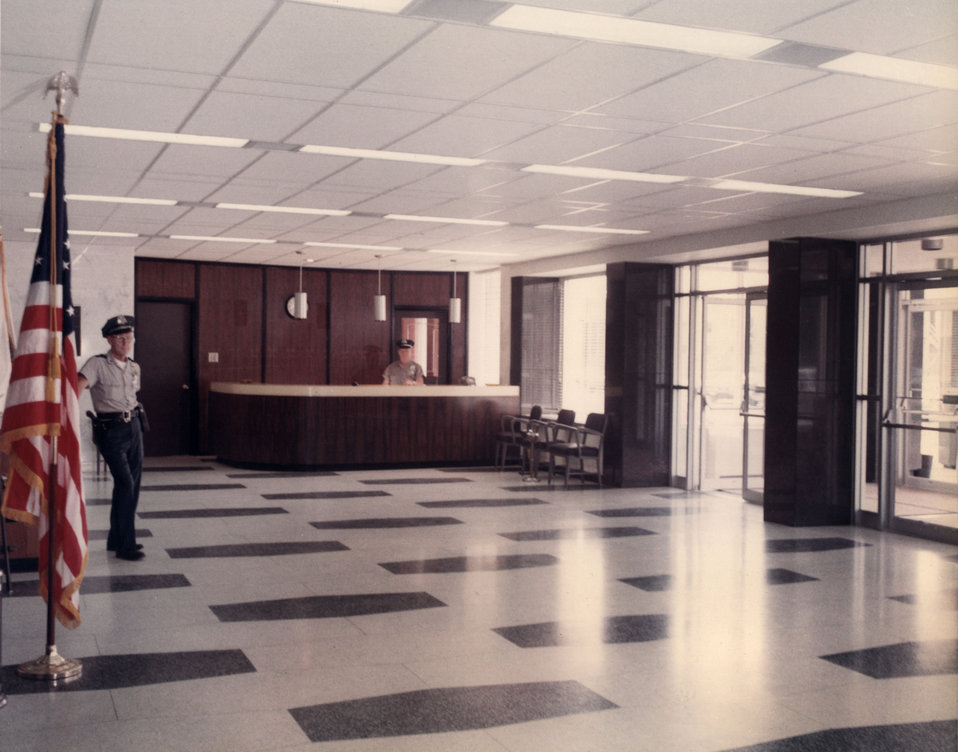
Main Lobby facing east Federal Office Bldg. Oak Ridge

Oak Ridge Federal Building DOE photo by Frank Hoffman

Main Lobby facing east Federal Office Bldg. Oak Ridge Tennessee 8-15-1970